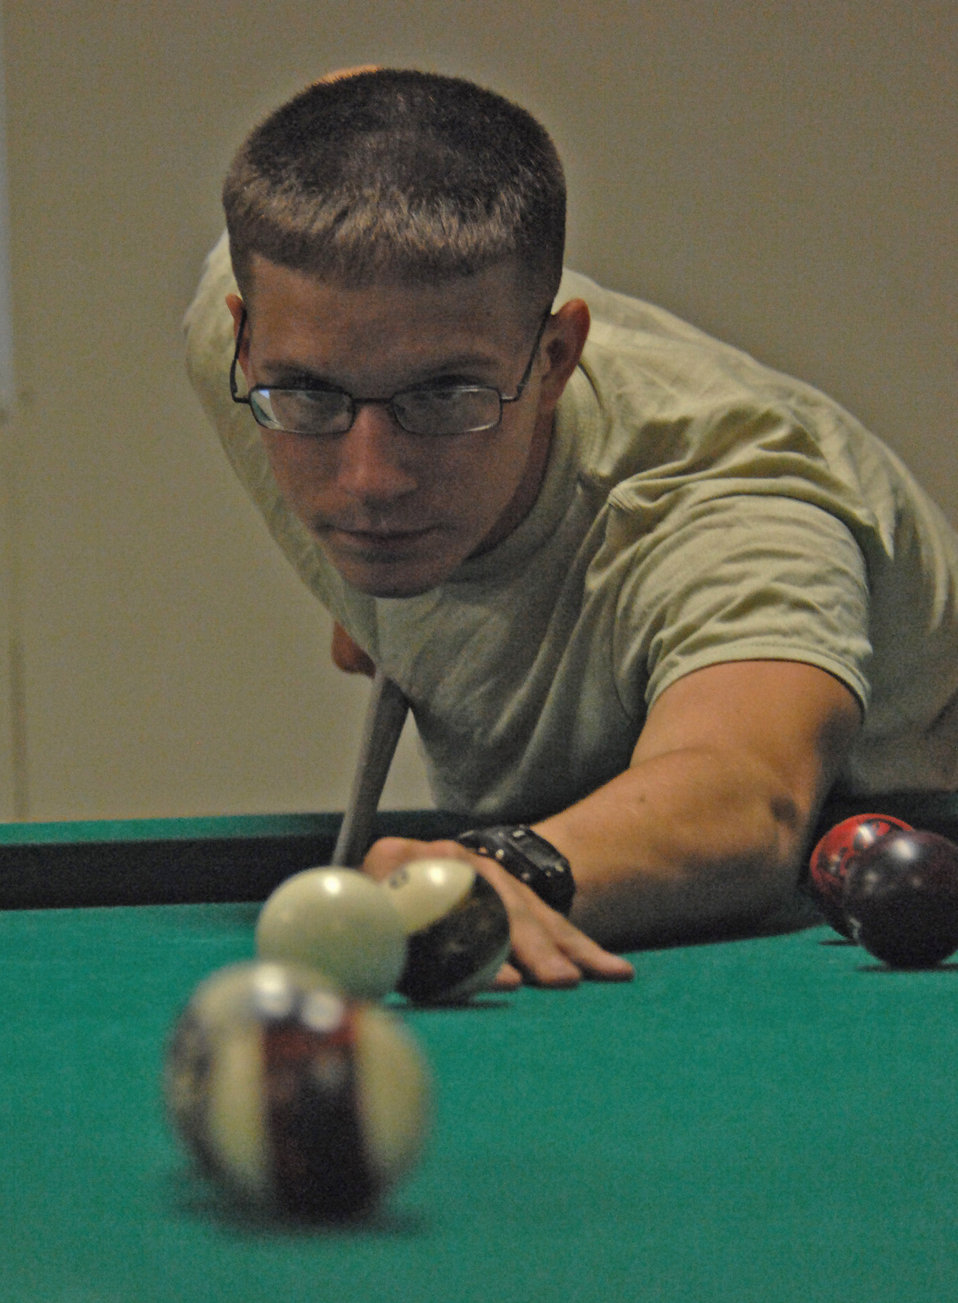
Improvements target morale for troops in Afghanistan

Army Pvt. Tyler Rogers focuses on making a shot on a pool table May 28 at the morale, welfare and recreation facility at a base in the Laghman Province in Afghanistan. Private Rogers is a mechanic for 4th Battalion, 319th Airborne Field Artillery Regiment deployed from Bamberg, Germany.